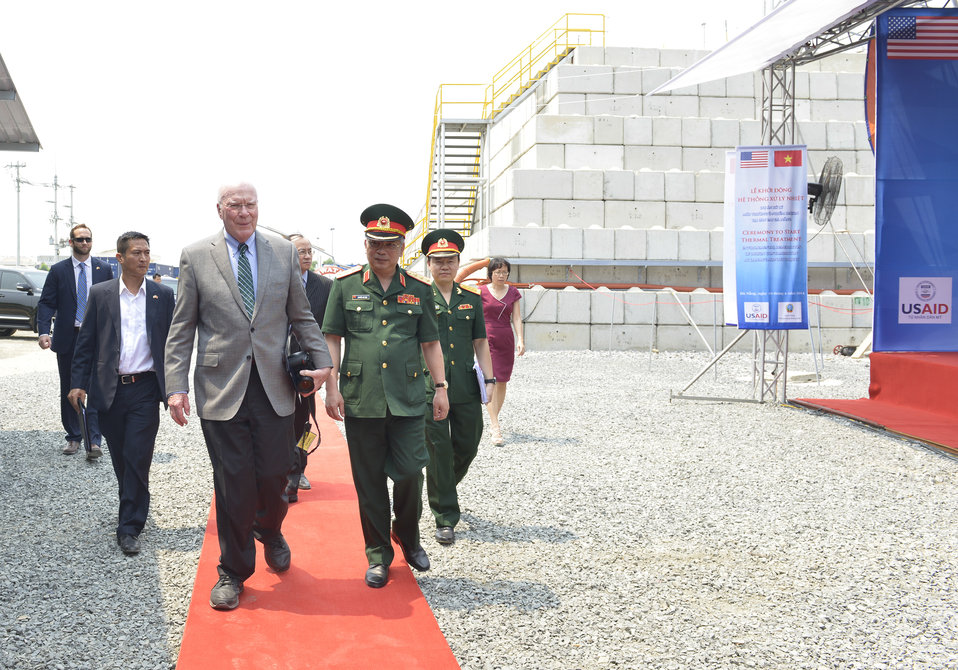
Senator Patrick Leahy (left) and Senior Lieutenant General Nguyen Chi Vinh (right), Vietnam’s Vice Minister of National Defense

Danang, April 19, 2014.